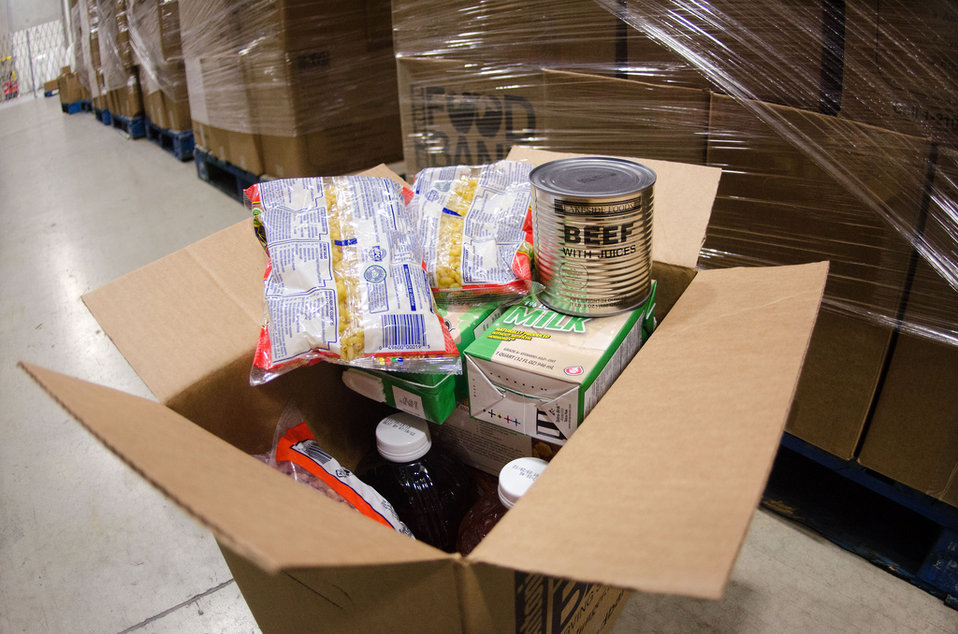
USDA Foods Picture

The U.S. Department of Agriculture (USDA) Web Based Supply Chain Management (WBSCM) system enabled the ordering, procurement, and delivery of 8.5 billion pounds of domestically-produced foods by successfully awarding nearly $3 billion in contracts during the last fiscal year.